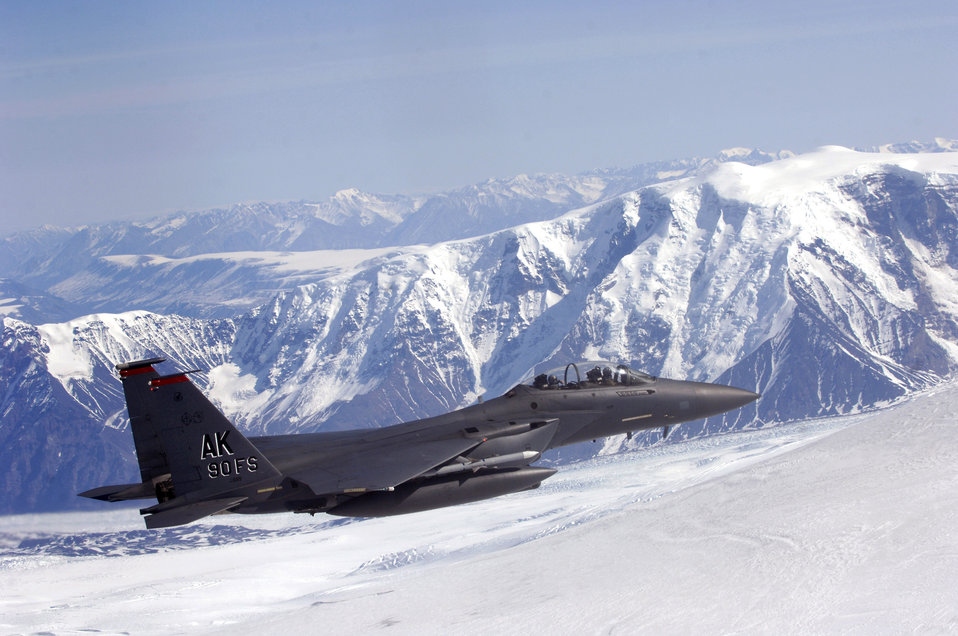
Alaskan Eagles

An F-15E Strike Eagle flys along the Wrangell and St. Elias Mountain Range during a training mission April 20 over Alaska. The F-15E is assigned to the 90th Fighter Squadron at Elmendorf Air Force Base, Alaska, which traces its history back to August 1917. The F-15E at Elmendorf AFB will soon be replaced by the F-22 Raptor.